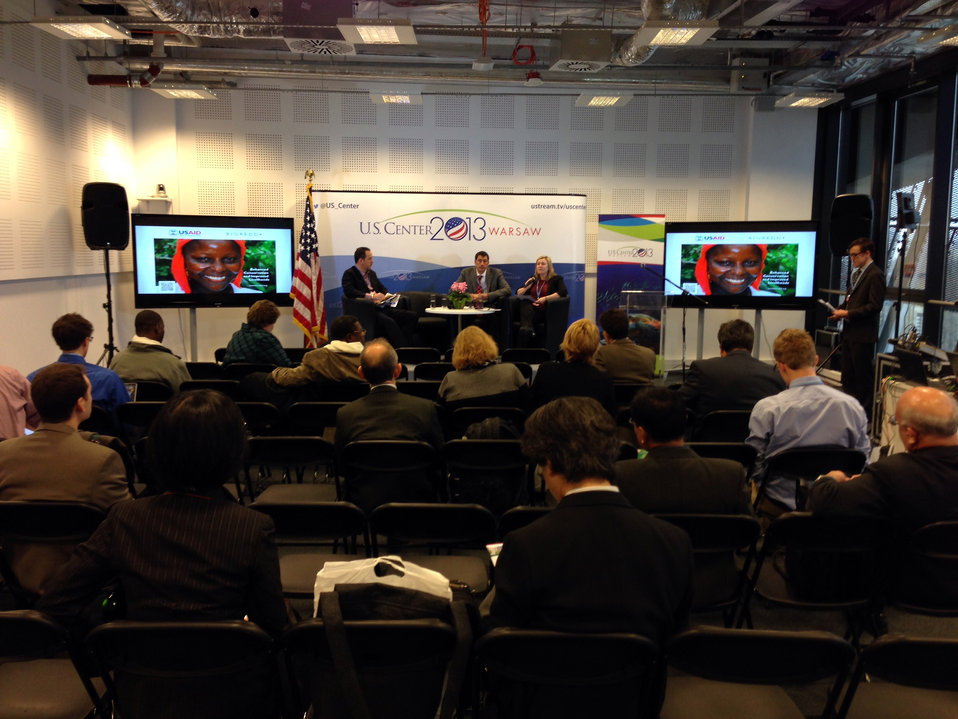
USAID Representatives Discuss REDD

Representatives from USAID discuss how USAID is partnering with countries around the world to strengthen their capacities and policy environments to participate in REDD to slow, halt, or reverse deforestation at the U.S. Center at the 19th Session of the Conference of the Parties to the UN Framework Convention on Climate Change (COP19) in Warsaw, Poland, on November 18, 2013.